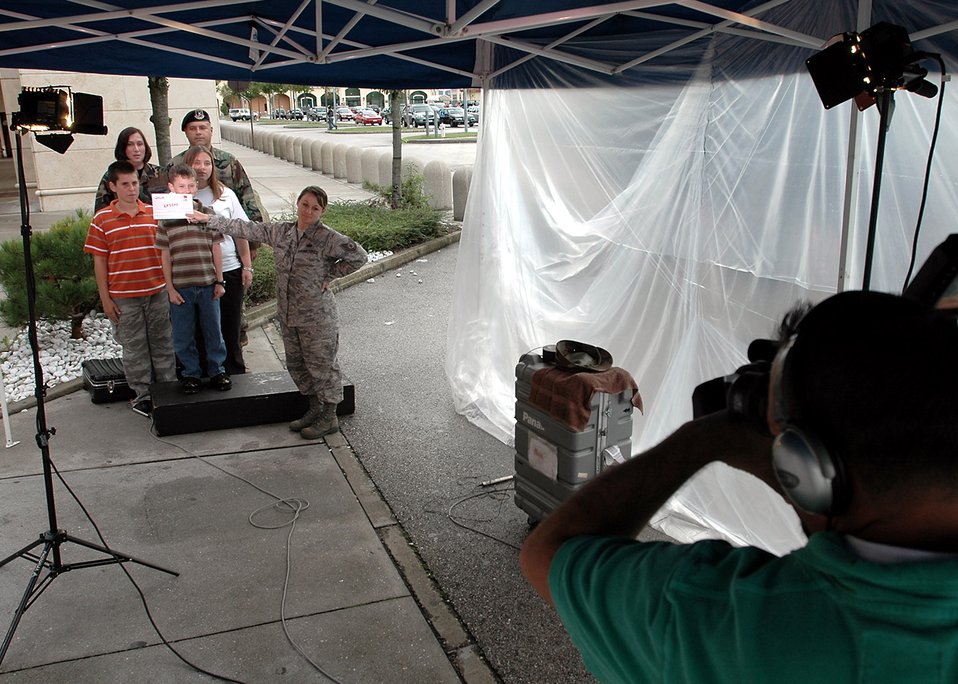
Holiday greetings program producing more than 7,000 'Hi moms'

Tech. Sgt. Michele Thomas holds up slate during the taping of a holiday greeting by the Wright family at Aviano Air Base, Italy, for family and friends back in the U.S. An Army and Air Force Hometown News